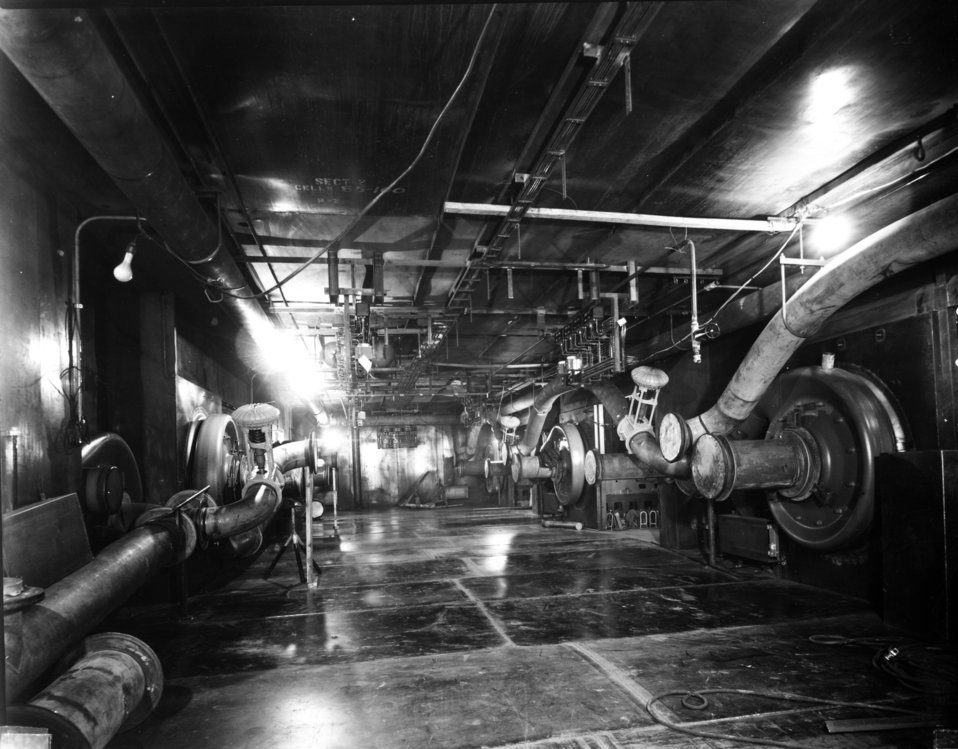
K-25 at Oak Ridge